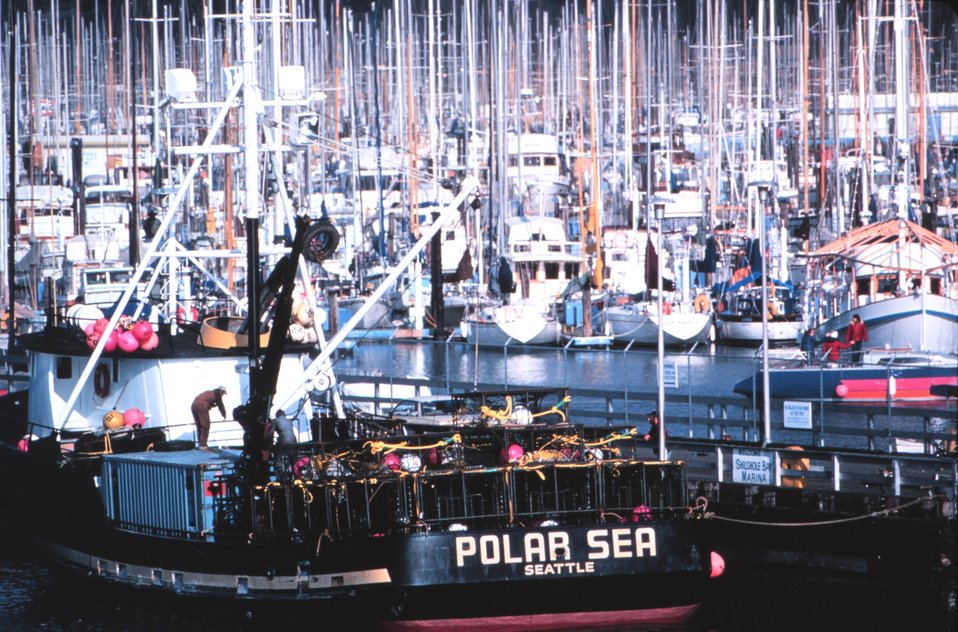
Fishing boats and more fishing boats